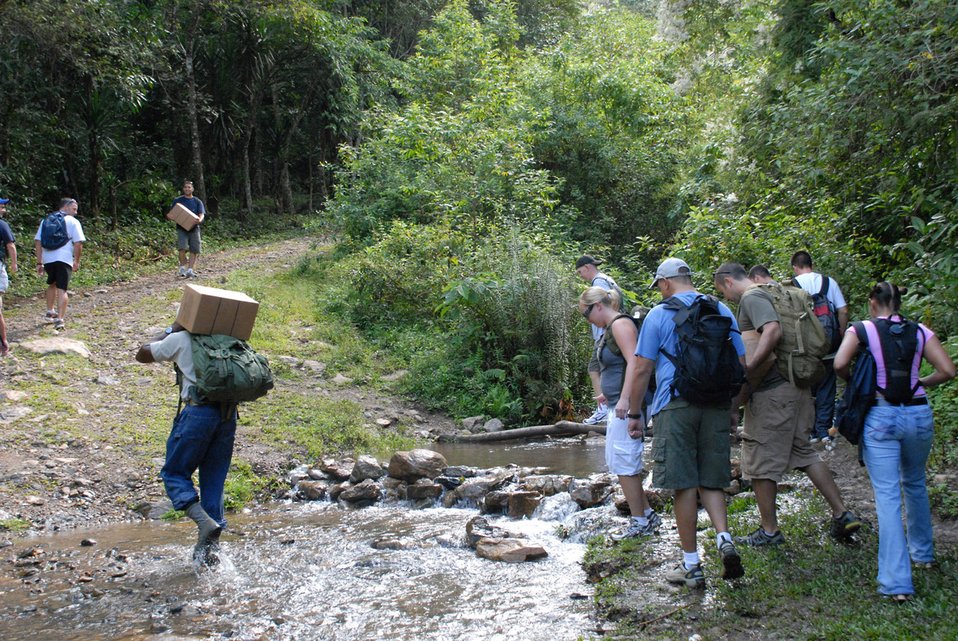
Servicemembers deliver food to Honduran mountain village

American servicemembers from Joint Task Force Bravo cross a stream at Aldea Bella Vista as they begin their hike up Comayagua Mountain to deliver food to people in the village of Bella Vista Oct. 20 in Honduras. The hike was organized by the JTF-Bravo chaplain to support local Hondurans. Approximately 50 servicemembers from Soto Cano Air Base, Honduras, participated in the hike.